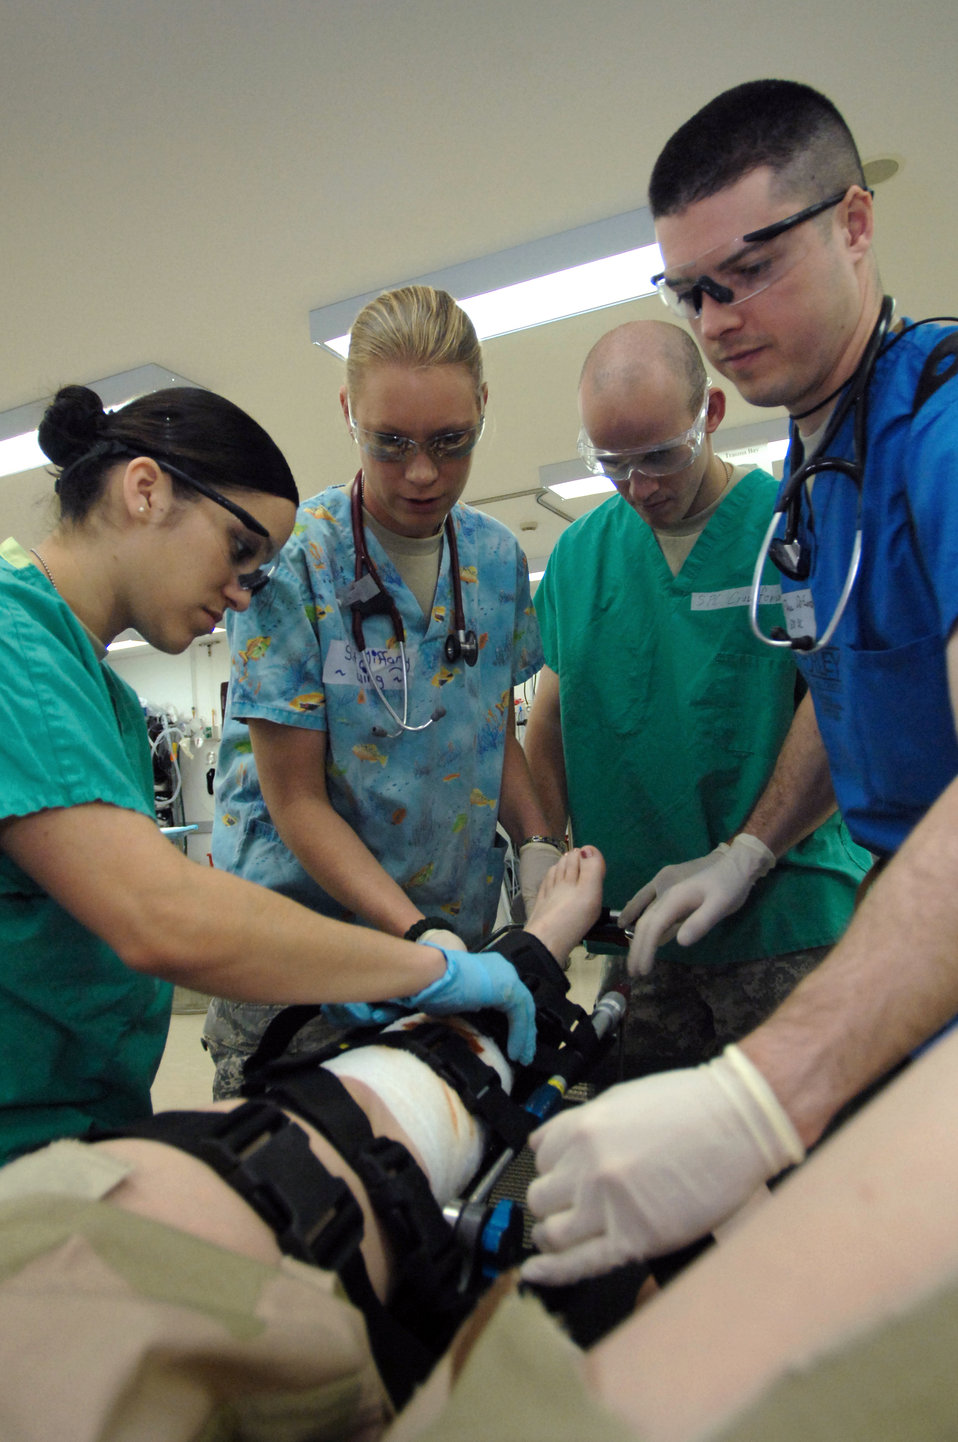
Patient perspective

Medical technicians and doctors at the Air Force Theater Hospital emergency room work to stabilize a